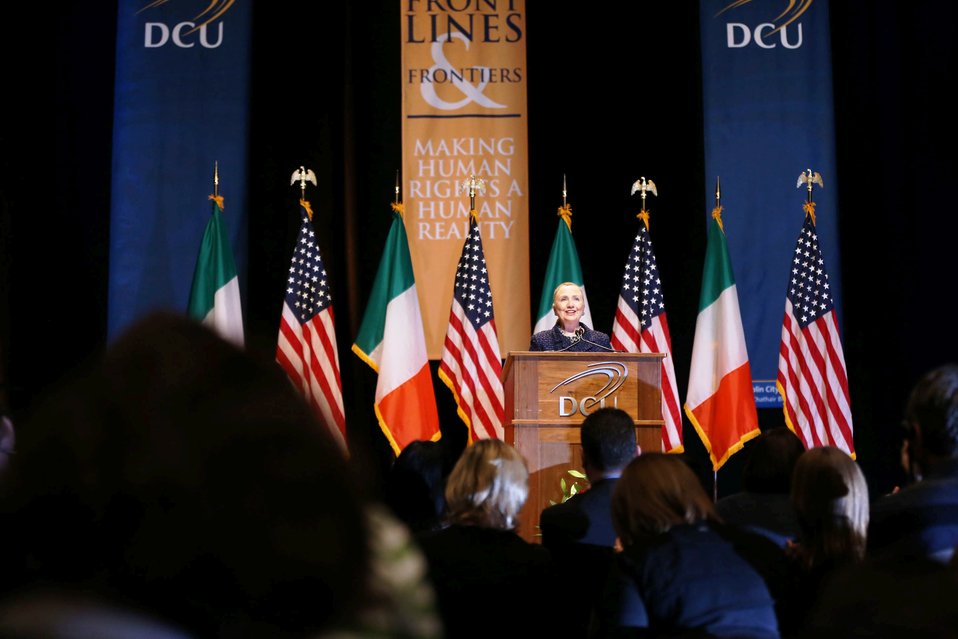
Secretary Clinton Delivers Remarks on Frontlines and Frontiers: Making Human Rights a Human Reality

U.S. Secretary of State Hillary Rodham Clinton delivers remarks on Frontlines and Frontiers: Making Human Rights a Human Reality at Dublin City University in Dublin, Ireland, December 6, 2012.